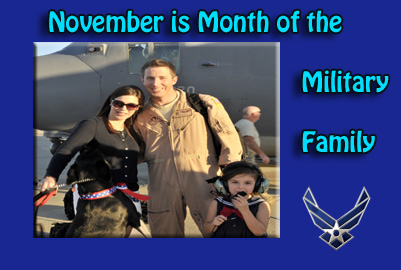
Month of the Military Family